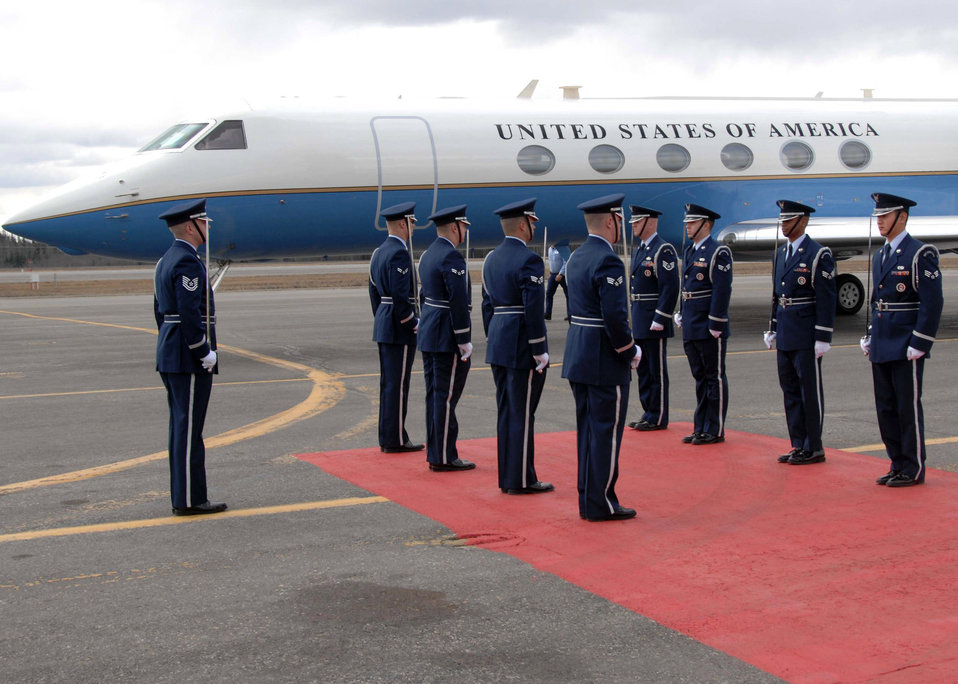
SECAF sees bright future for Eielson Airmen

The 354th Fighter Wing Honor Guard awaits the arrival of the Secretary of the Air Force Michael W. Wynne May 8 at Eielson Air Force Base, Alaska. The 21st secretary of the Air Force toured the Pacific Region to introduce his top priorities for the Air Force -- winning the war on terrorism, fostering mutual integrity and respect, and revitalizing the service's aging infrastructure and fleet.